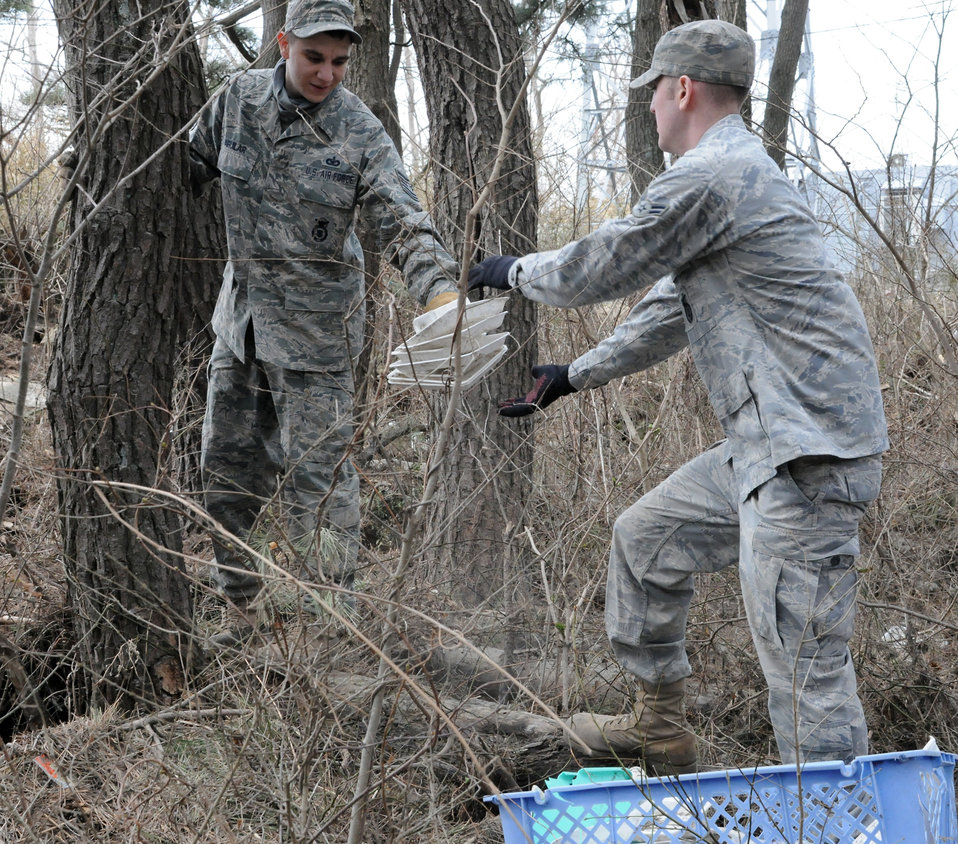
Misawa Airmen continue relief efforts

Airmen collect debris April 7, 2011, during a humanitarian relief mission in Hachinohe, Japan. The Airmen are assigned to the 35th Security Forces Squadron at Misawa Air Base, Japan.